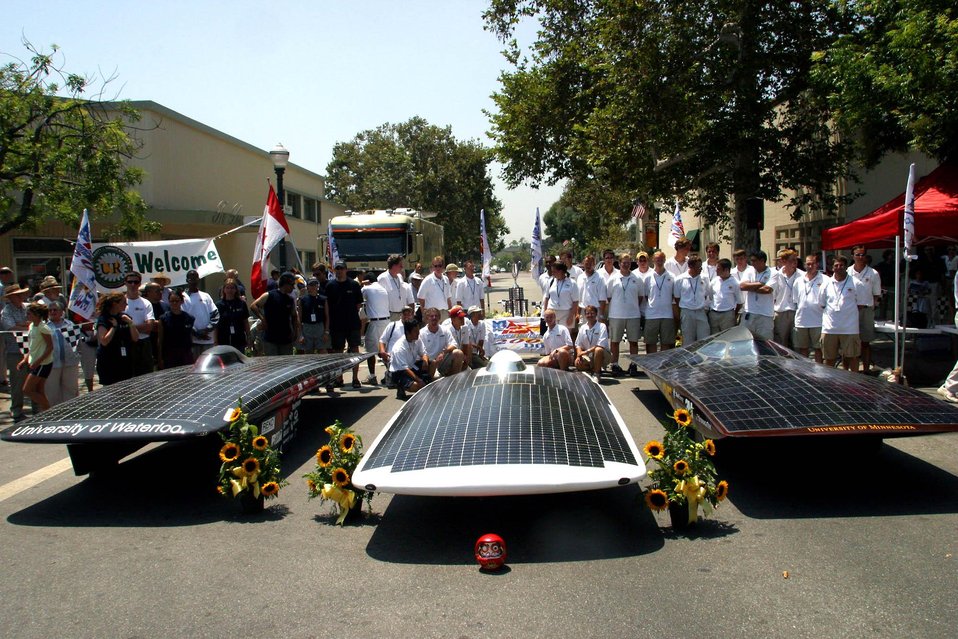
WINNERS UNIVERSITY OF MISSOURI-ROLLA, FIRST, IN THE CENTER AND UNIVERSITY OF MINNESOTA, SECOND AND UNIVERSITY OF WATERLOO, THIRD.

THE AMERICAN SOLAR CHALLENGE, THE LONGEST SOLAR CAR RACE IN THE WORLD, IS A DOE SPONSORED EDUCATIONAL EVENT IN WHICH TEAMS COMPETE TO BUILD AND RACE SOLAR-POWERED CARS. TWENTY UNIVERSITIES PARTICIPATED IN THIS YEAR'S EVENT WHICH STARTED IN CHICAGO, ILLINOIS ON JULY 13 AND FOLLOWED ROUTE 66 FOR 2300 MILES TO CLAREMONT, CALIFORNIA, ENDING ON JULY 23, 2003. THE UNIVERSITY OF MISSOURI-ROLLA WON BY FINISHING IN 51 HOURS.